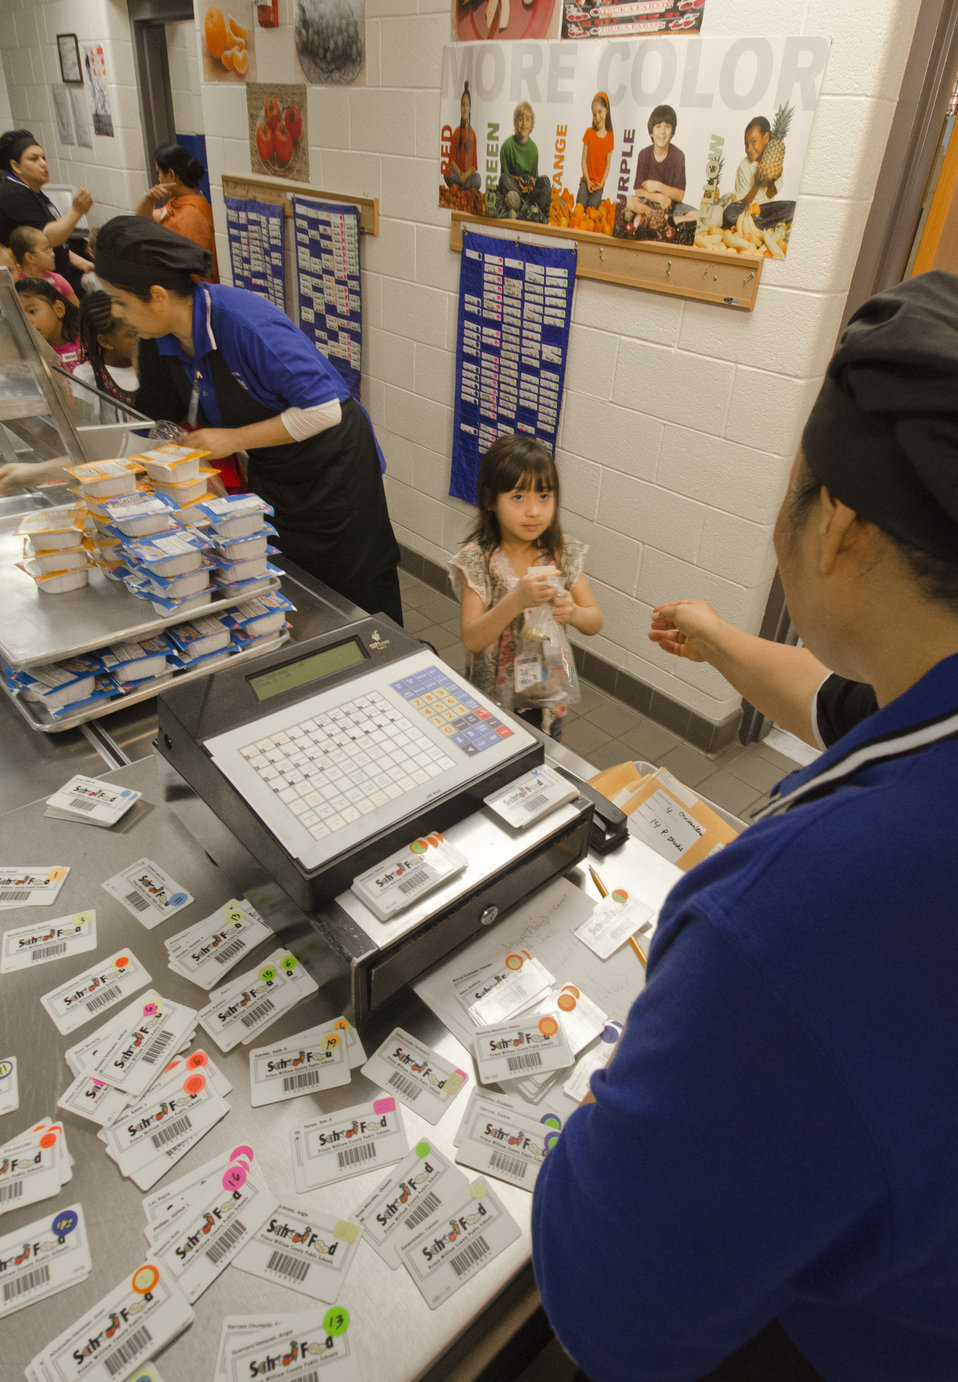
School lunch staff and students enjoy the new school lunch menu created to meet the new standards at the Yorkshire Elementary School in Manassas, VA on Friday, Sept. 7, 2012.